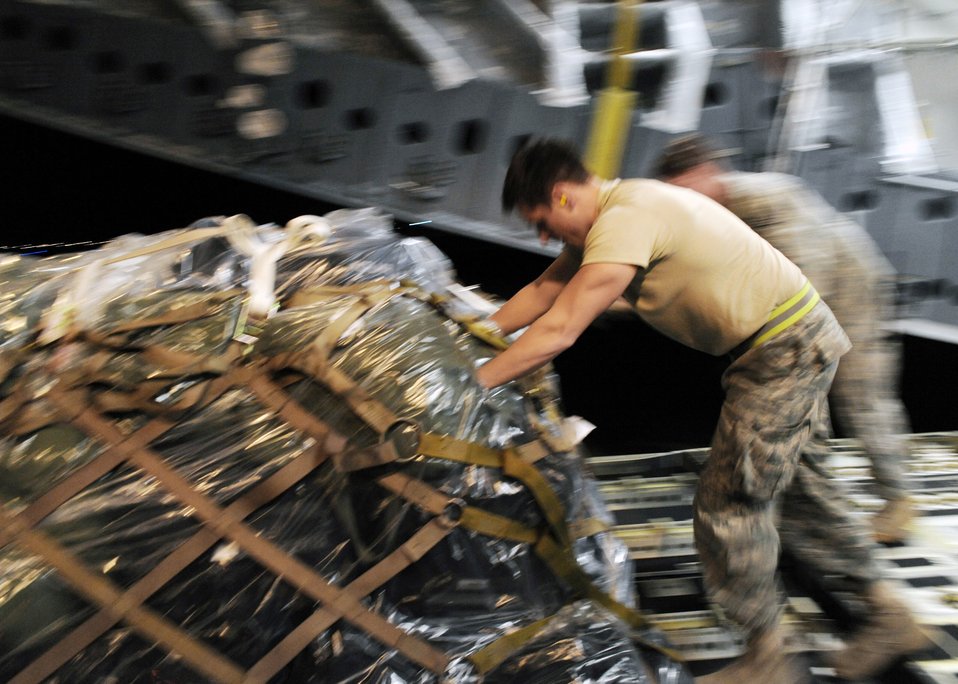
Haiti Humanitarian Effort

Staff Sgt. Caleb Barmody helps to unload supplies from a C-17 Globemaster III in Port-au-Prince, Haiti, Jan. 15, 2010. Air Mobility Command is participating in coordinated relief effort to save lives and alleviate human suffering in the aftermath of the earthquake. Sergeant Barmody is an air transportation journeyman with the 817th Global Mobility Squadron.